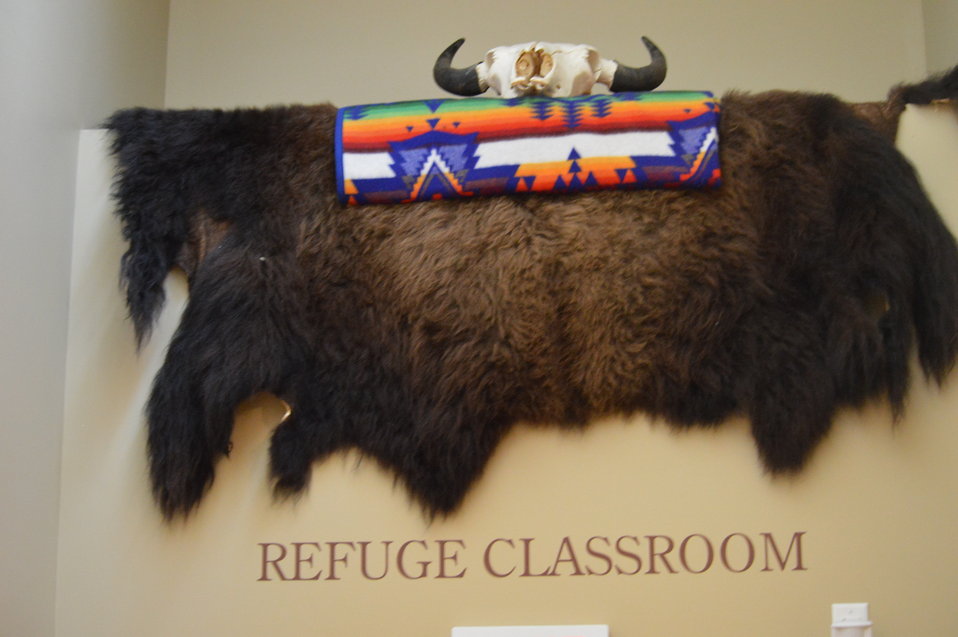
Inside the Visitor's Center

Scenery and wildlife and Audubon National Wildlife Refuge in North Dakota.